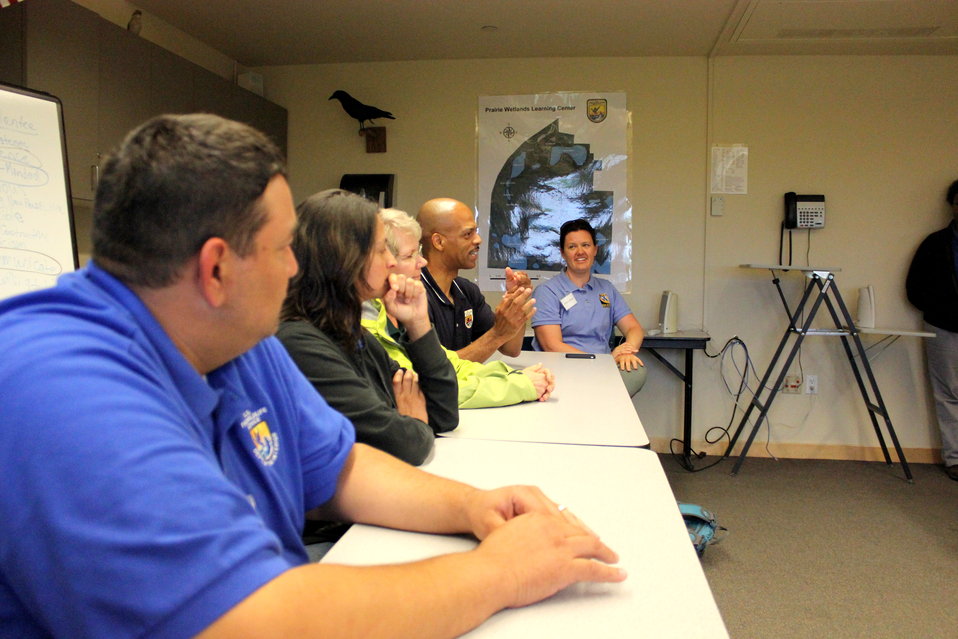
CDIP 2012 Fergus Falls

Mentor Panel in Midwest